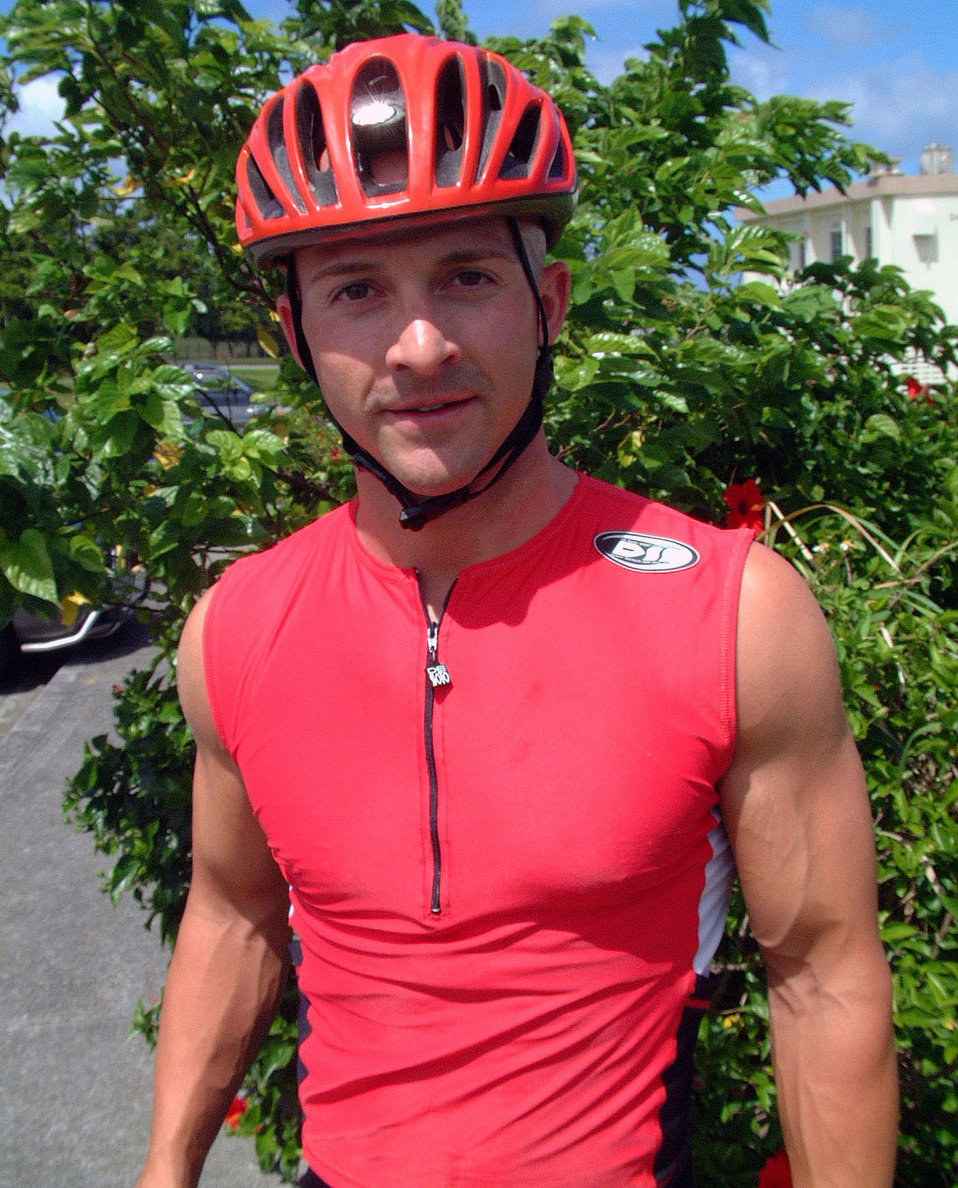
Ironman

KADENA AIR BASE, Japan -- Shawn Hnatko trains here for the Ironman Triathlon World Championships in Hawaii on Oct. 18. During the competition, he will swim 2.4 miles, bike 112 miles and run a 26.2-mile marathon.